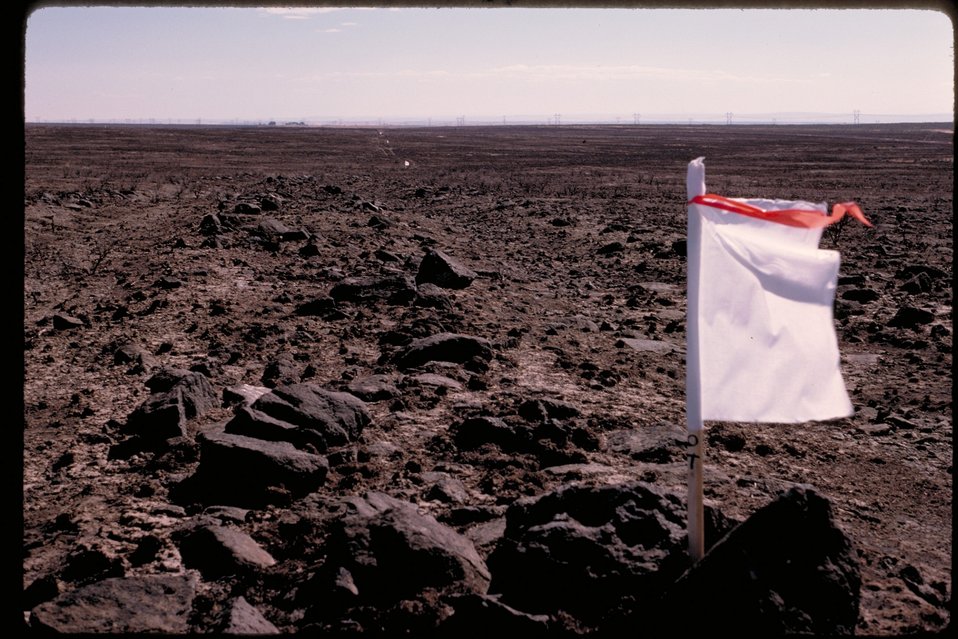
Flagging Oregon Trail near Teapot Dome Prior to Reseeding Lower Snake River District